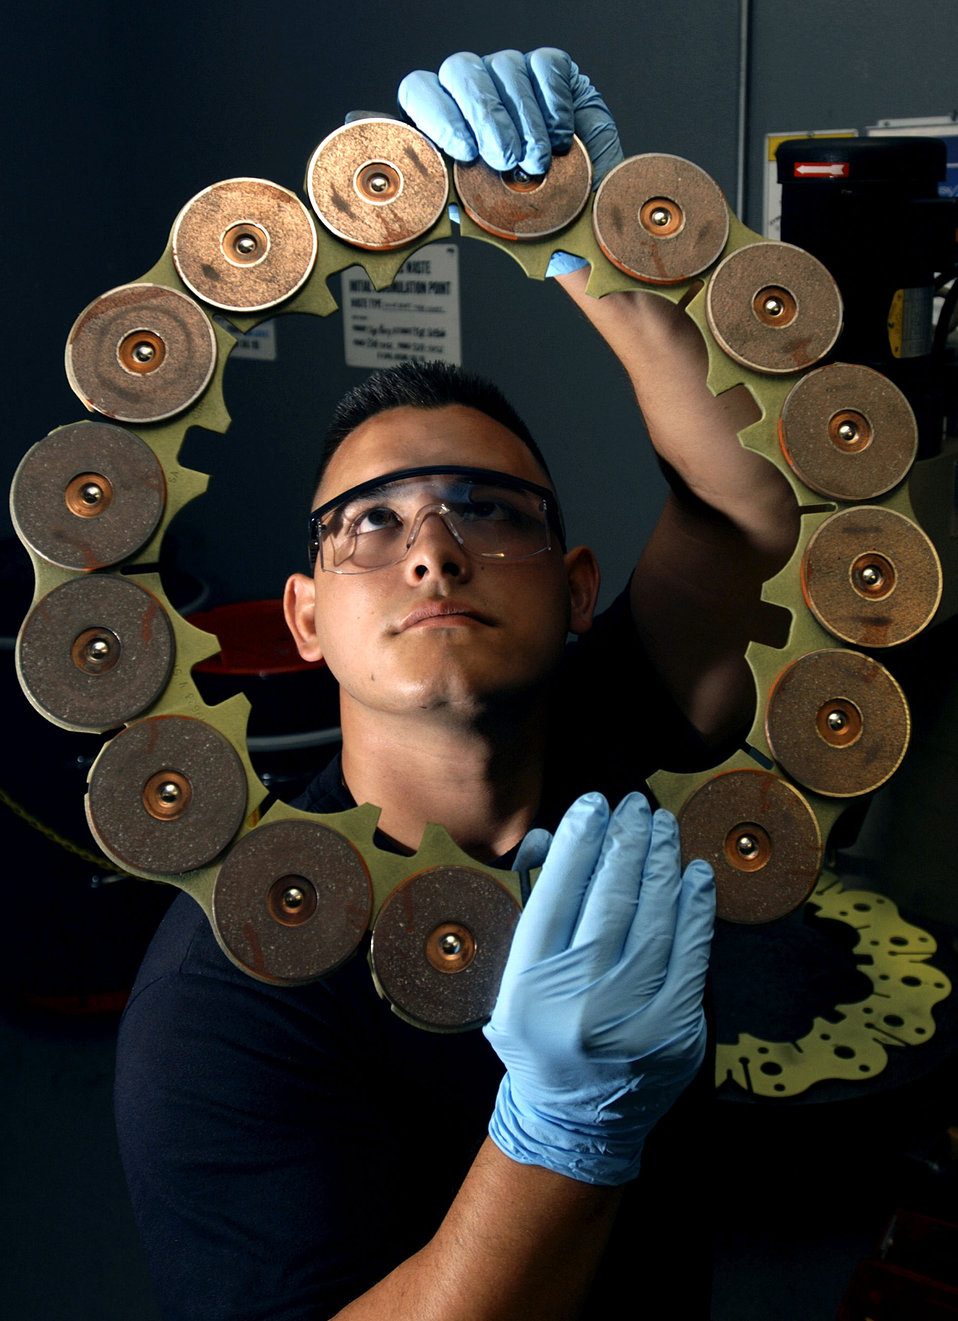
Midas touch

MACDILL AIR FORCE BASE, Fla. -- Staff Sgt. Dallas Grover inspects the rivets on the lining plates of a KC-135 Stratotanker brake assembly here May 13. Sergeant Grover is assigned to the 6th Maintenance Squadron.